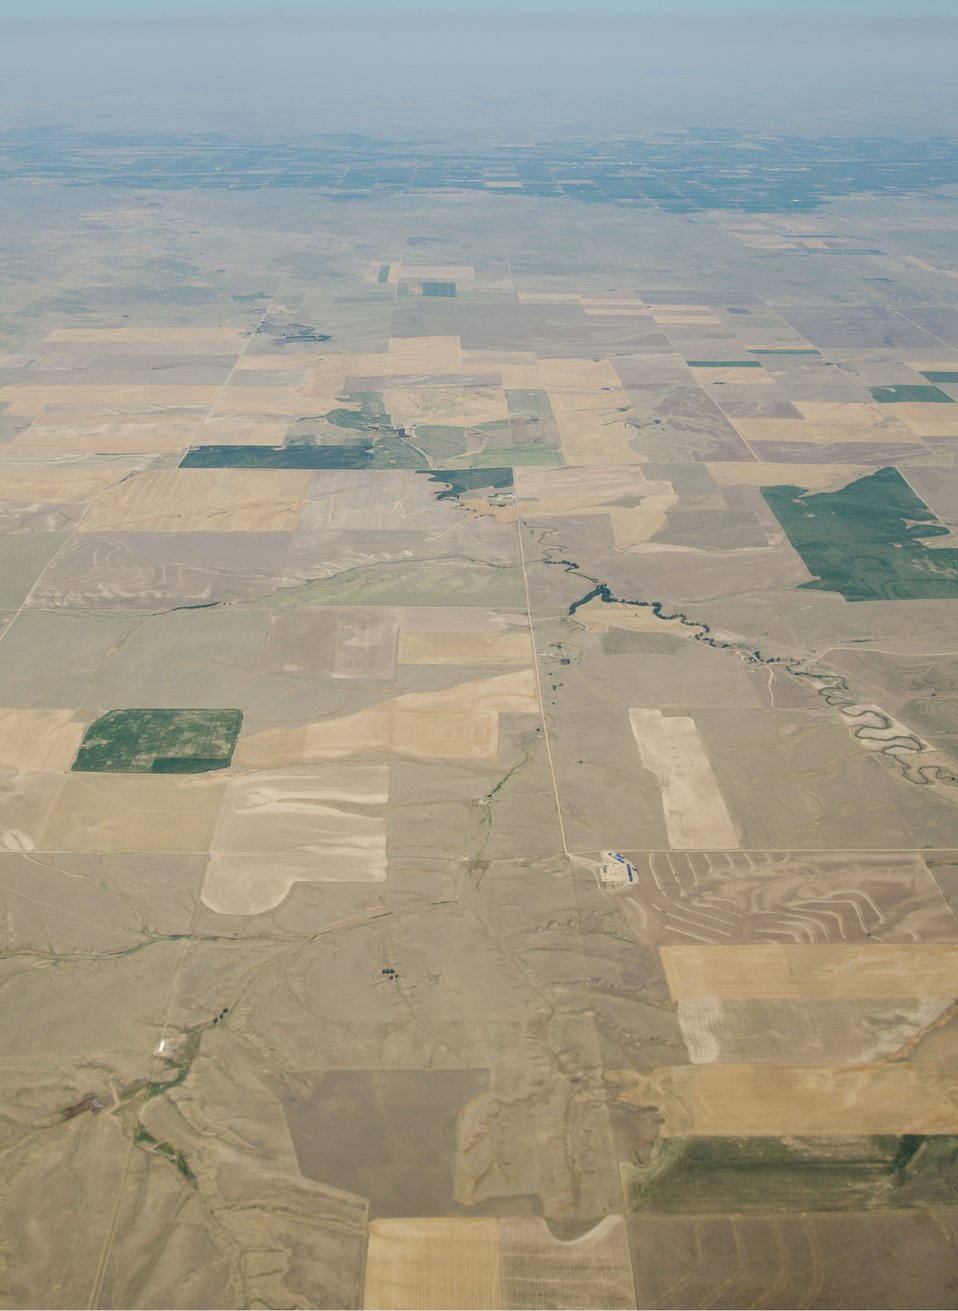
Aerial views of drought affected Colorado farm lands, 107 miles east of Denver, Colorado on Saturday, July 21, 2012. Green areas are irrigated, the yellow areas are dryland wheat crops.